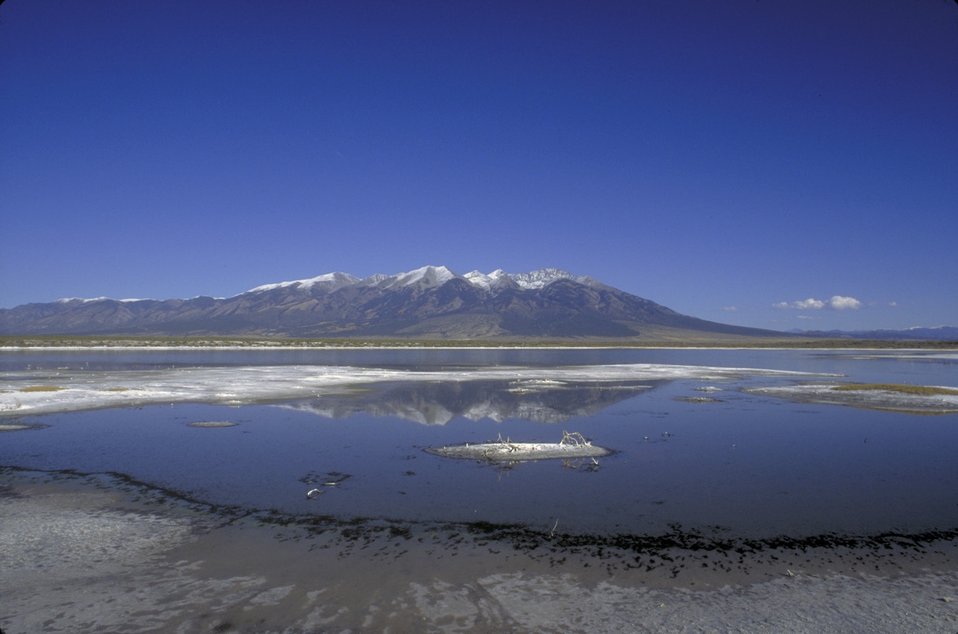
Blanca Wetlands